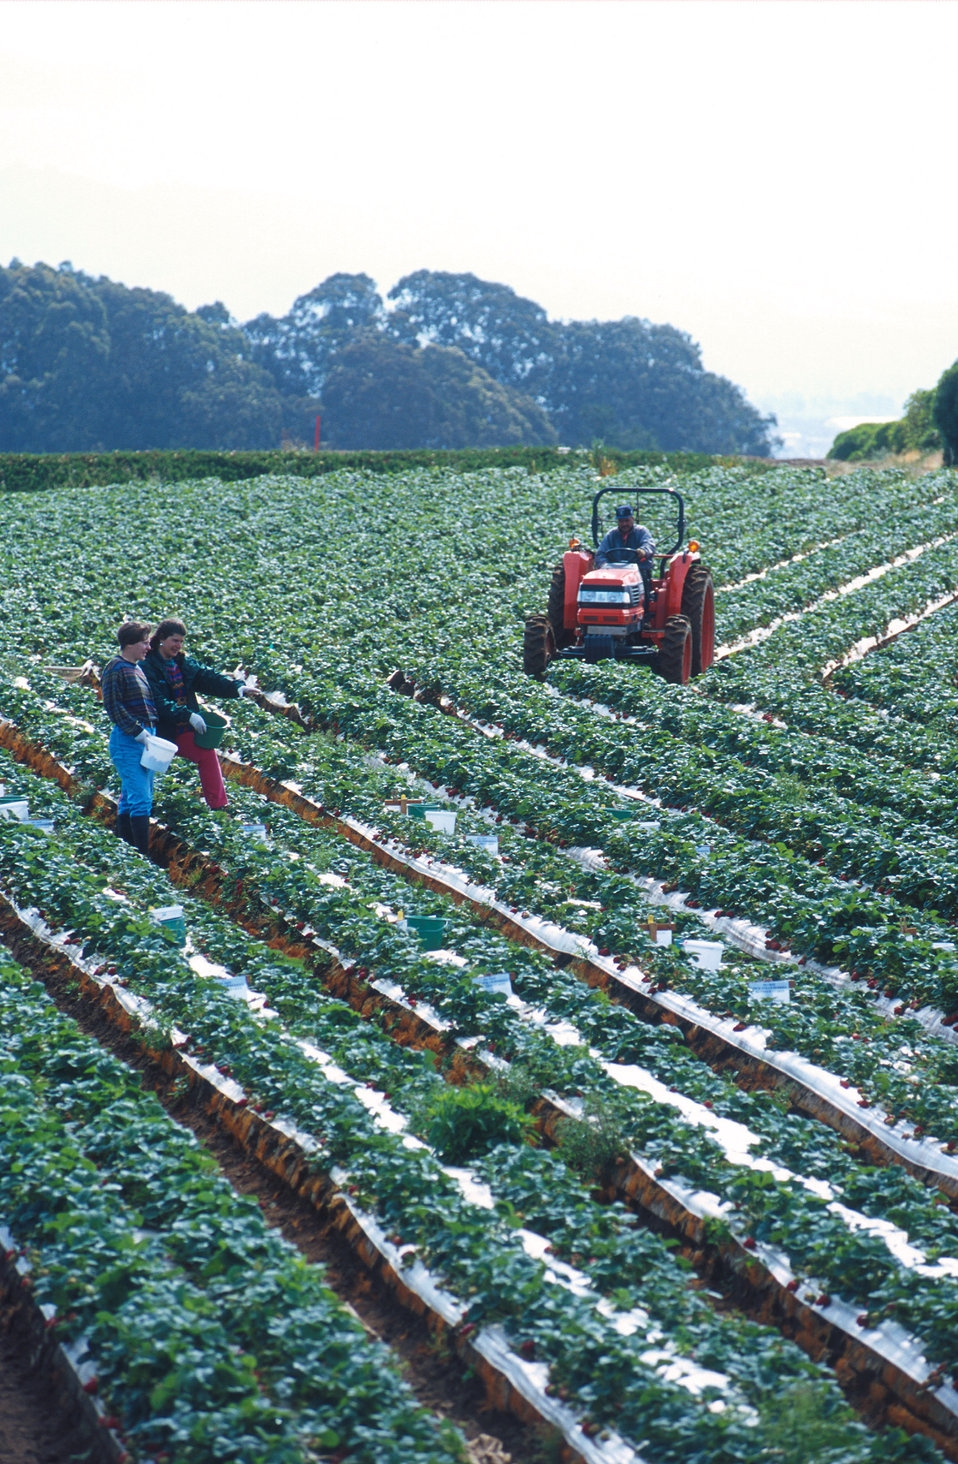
Ranchers in California set aside portions of their farms for collaborative studies on methyl bromide alternatives for strawberries. Adria Bordas and Carolee Bull evaluate biologically based methods for weed and disease control at Rod Koda's ranch.